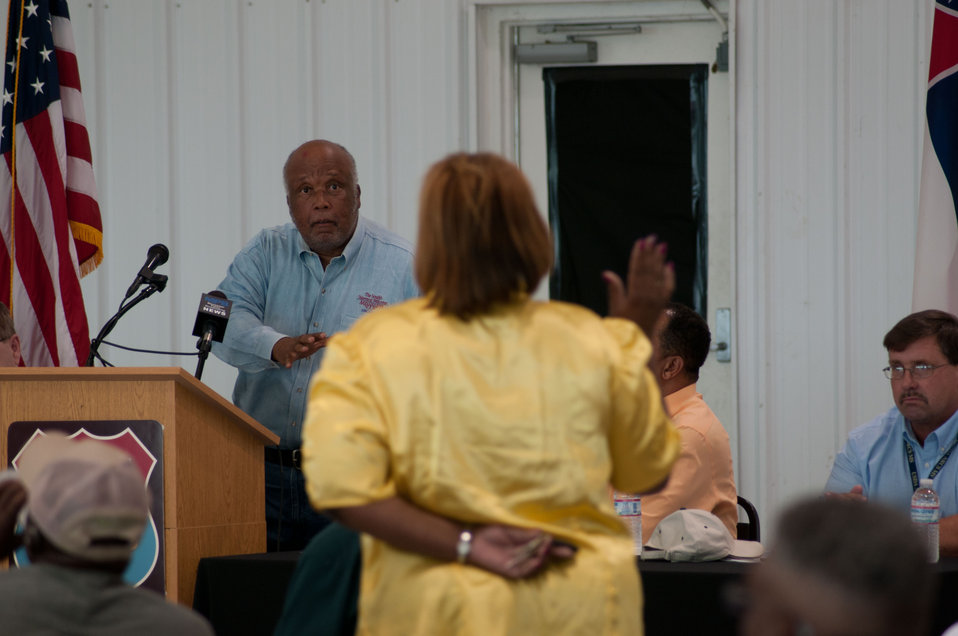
Mississippi Congressman Bennie Thompson hosted a farmers outreach event, to express the importance for record keeping, government and commercial claims, and appeals at Tunica Airport in Mississippi on Thursday, May 19, 2011. Along with Congressman Thompson, was U.S. Department of Agriculture’s Undersecretary for Rural Development Dallas Tonsager; Acting Under Secretary Farm and Foreign Agriculture Service Michael Scuse; Rural Development State Director Trina N. George and FEMA, State and Local officials.